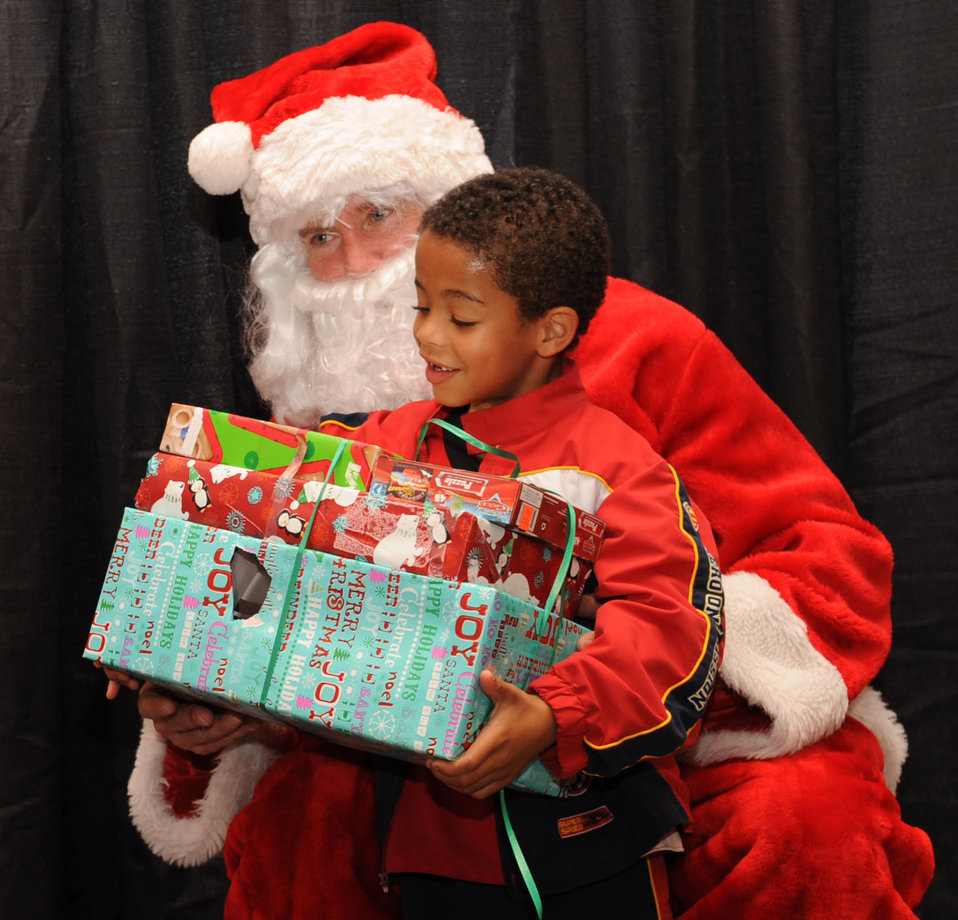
I've been good!

Santa Claus gives Jacob Thrasher, 6, presents during the Santas in Blue event Dec. 18, 2010, at the civic center in Bossier City, La. The program is sponsored by the Air Force Sergeants Association and Barksdale Top Three to provide gifts for more than 400 children in foster care.